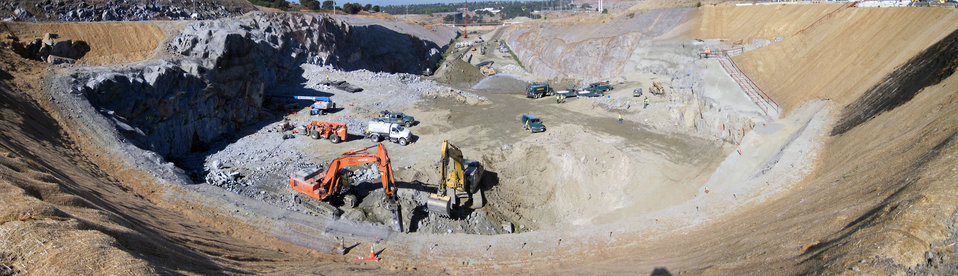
Panoramic view of auxiliary spillway construction at Folsom Dam site

Using digital imaging technology that “stitches” multiple images together to create a panoramic image, geologists for the U. S. Army Corps of Engineers Sacramento District provided this glimpse into the past of the Folsom Dam Joint Federal Project auxiliary spillway construction. The images used in the panoramic were taken September 26, 2011 at the Folsom Dam in Folsom, Calif. The Sacramento District is building the spillway in cooperation with the U.S. Bureau of Reclamation, the Central Valley Flood Protection Board, and the Sacramento Area Flood Control Agency to improve the safety of the existing dam and reduce flood risk for the greater Sacramento area. (U.S. Army photo illustration by Kim Jorgensen/Released)